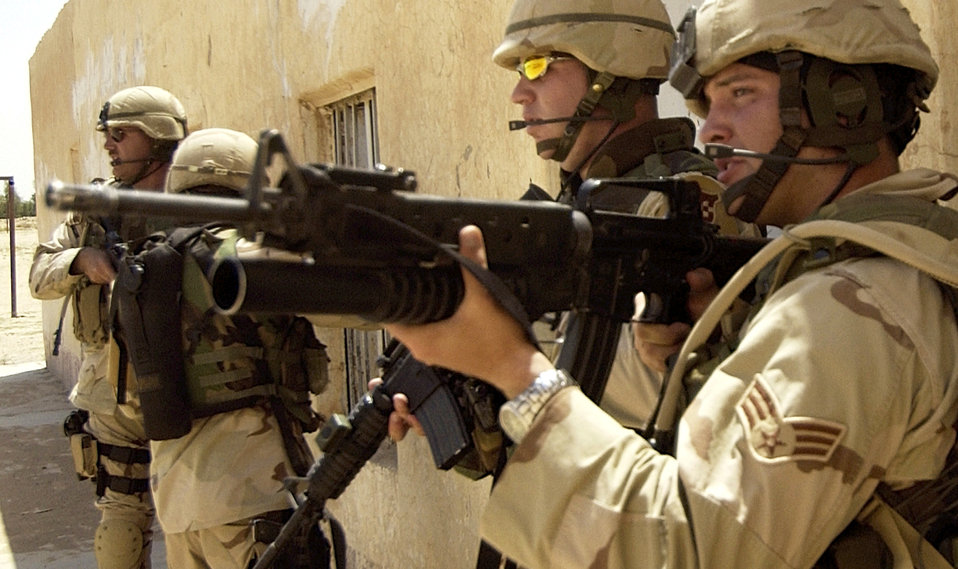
Covering their backs

BALAD AIR BASE, Iraq -- Senior Airman Rory McMilton (right) and U.S. Army Spc. Shane Yokum stand guard as others from their element sweep a building during a patrol here Aug. 1. Airman McMilton is a security forces journeyman with the 332nd Air Expeditionary Security Forces Squadron and Specilist Yokum is a military policeman with the 362nd Military Police Battalion.